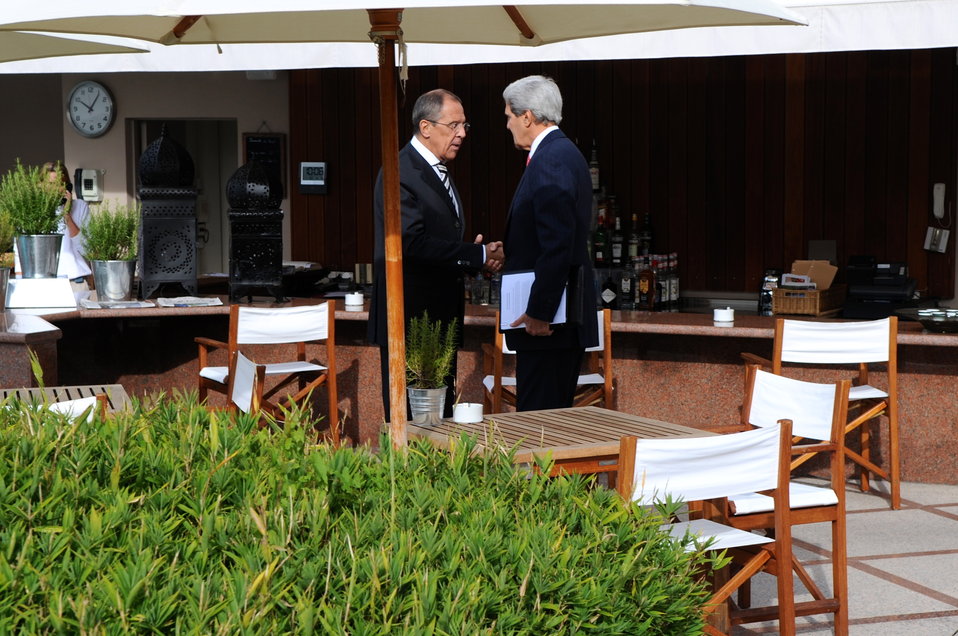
Secretary Kerry, Foreign Minister Lavrov Meet to Finalize Syria Agreement

U.S. Secretary of State John Kerry shakes hands with Russian Foreign Minister Sergey Lavrov as the two meet for an impromptu poolside negotiating session to finalize an agreement related to ridding Syria of chemical weapons in Geneva, Switzerland, on Sept. 14, 2013.